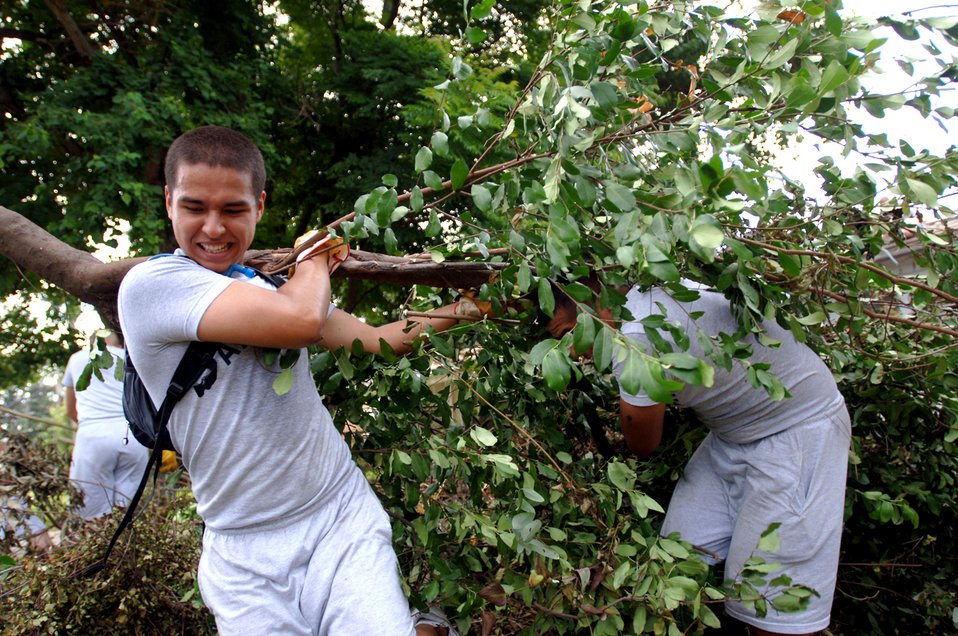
Helping the community recover

Airmen Basic Wilder Mata and Frank Morales clear the brush in the front yard of a house in Biloxi, Miss., Aug. 25. The civilian's home was heavily damaged by Hurricane Katrina one year ago. The Airmen are trainees with the 332nd Training Squadron at Keesler Air Force Base, Miss.